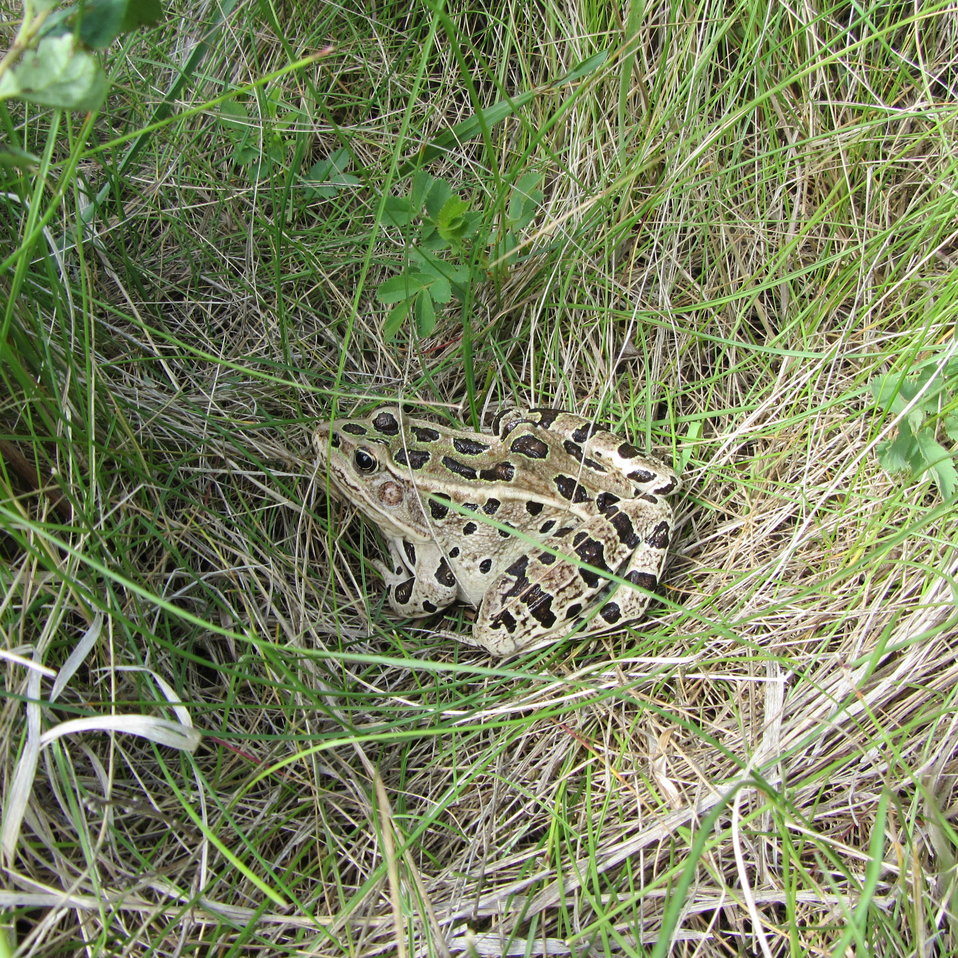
Leopard Frog

Jackie Jacobson/USFWS